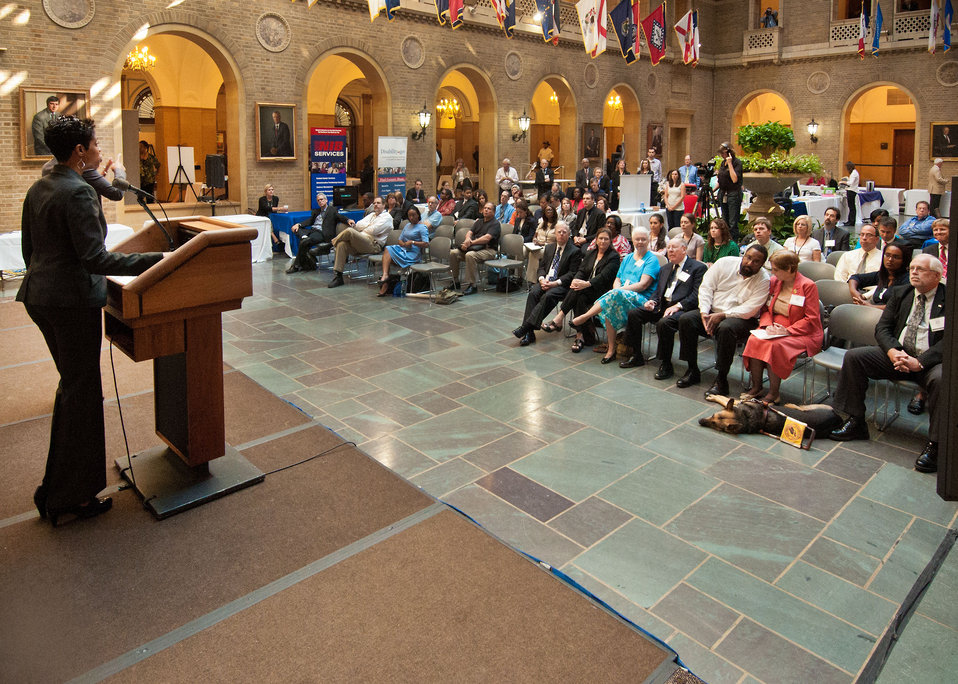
U.S. Department of Agriculture (USDA) Target Center Director D’Ann Clayton welcomes employees and guests to USDA’s Departmental Management (DM) Target Center 20th Anniversary at USDA in Washington, D.C. on Thursday, Sept. 13, 2012. The USDA Target Center has provides Assistive Technology to employees with disabilities. The Center has assisted thousands of individuals with disabilities to further contribute to the mission of USDA. The Target Center has also partnered with the Department of Defense Computer/Electronic Accommodations Program (CAP).